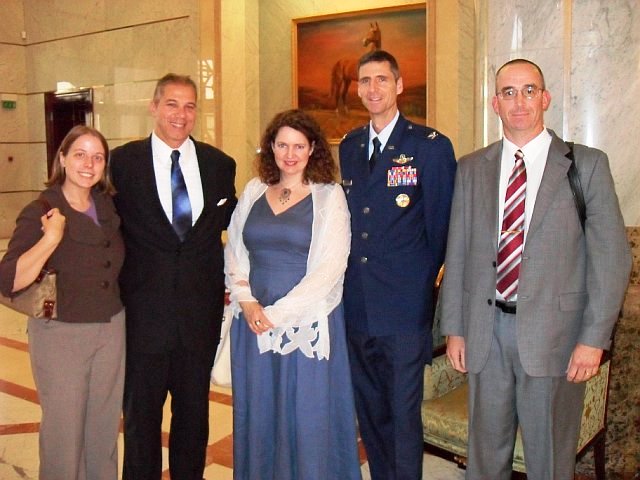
U.S.-Turkmenistan Business Council Participants Pose for a Photo

Participants of the U.S.-Turkmenistan Business Council pose for a photo in a hotel in Ashgabat, Turkmenistan, on June 16, 2010.